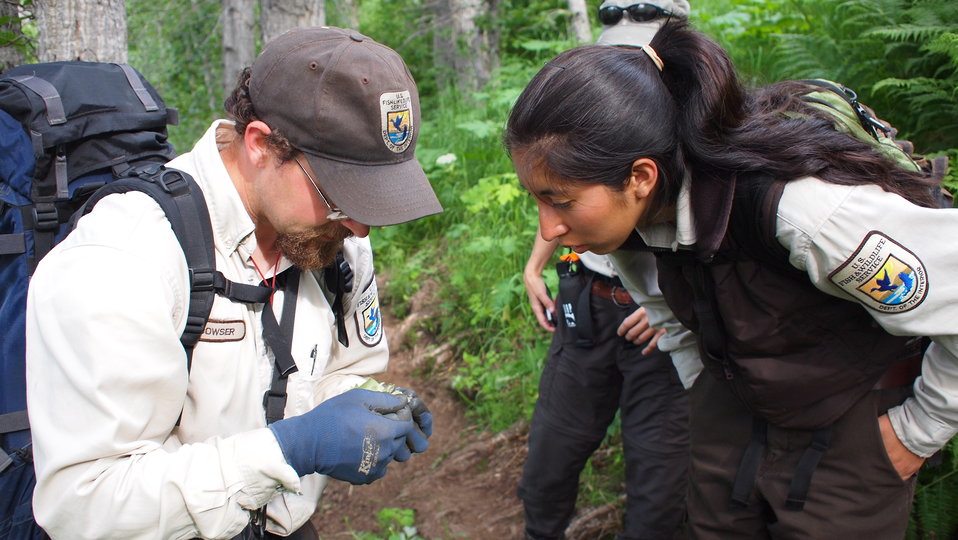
2012-Alaska Region-Work(03)

Alaska Career Discovery Program in Partnership with the Student Conservation Association